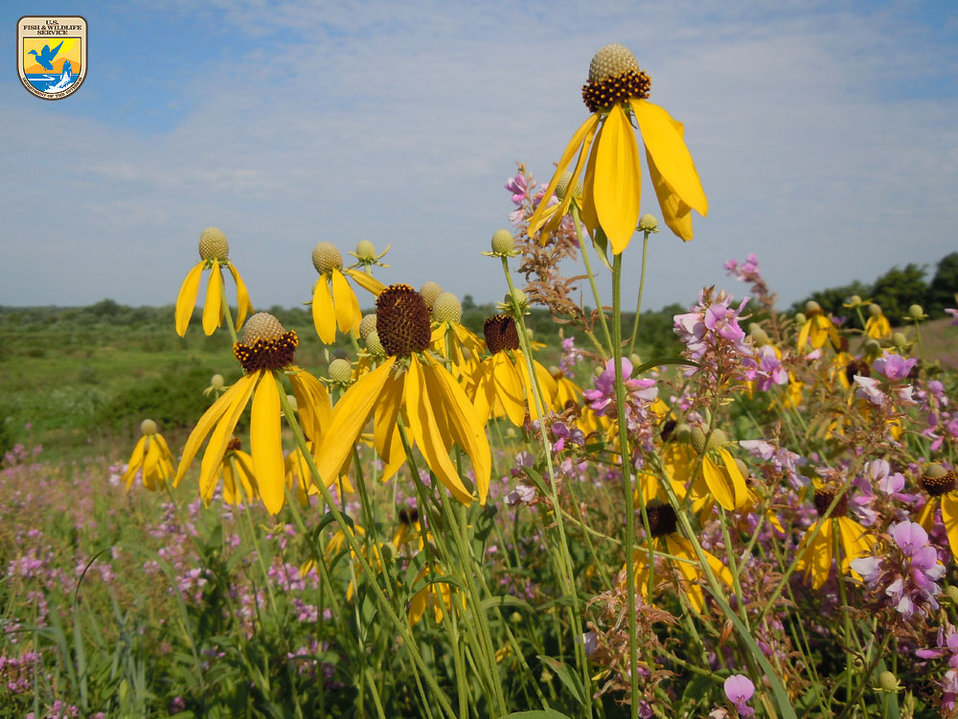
Yellow Coneflower - Midwest Region

Yellow coneflowers and Illinois ticktrefoil.